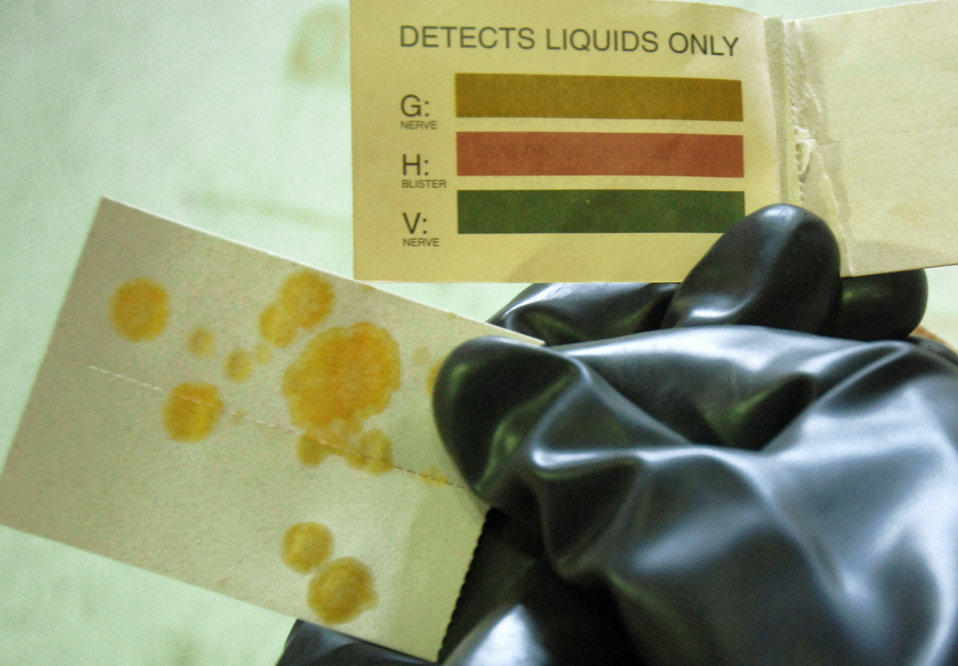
Training that matters

Senior Airman John Buckley demonstrates how to identify chemical agents on a piece of M8 paper Apr. 7. Airman Buckley is a chemical, biological, radiological, nuclear and high-yield explosives training instructor and responder assigned to the 354th Civil Engineering Squadron at Eielson Air Force Base, Alaska.